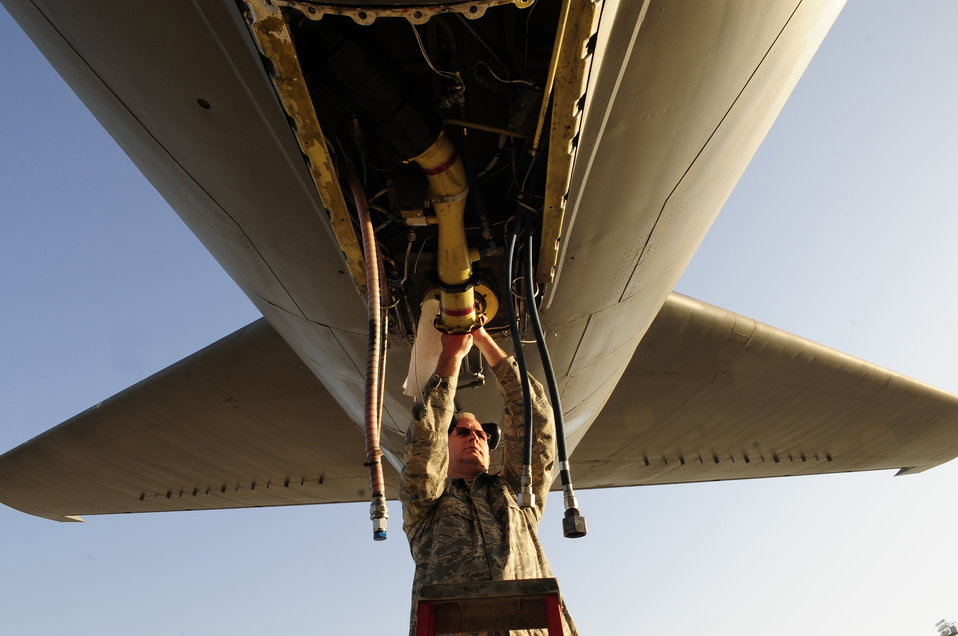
Leaders describe path to peace in Libya

Tech. Sgt. David Sparkman cleans off the boom strut of a KC-135 Stratotanker April 12, 2011, to prepare it for a magnetic particle inspection. Sergeant Sparkman is from the Pennsylvania Air National Guard’s 171st Air Refueling Wing and is deployed with the 313th Air Expeditionary Wing at an air base in Western Europe supporting Operation Unified Protector, a NATO-led mission in Libya, to protect civilians and civilian-populated areas under threat of attack. The 313th AEW provides aerial refueling to U.S. and coalition aircraft using KC-135 Stratotankers and KC-10 Extenders.